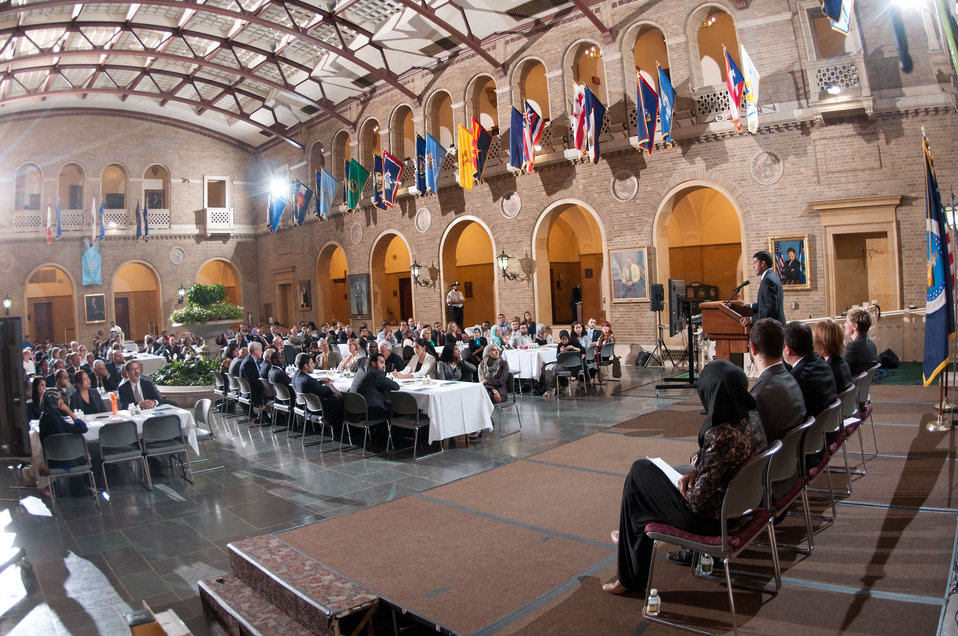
U.S. Agency for International Development (USAID) Administrator Dr. Rajiv Shah spoke at theIftar event, co-sponsored by the Iftar celebration, co-sponsored by the U.S. Department of Agriculture, U.S. Agency for International Development (USAID) and Islamic Relief USA, on Tuesday, August 7, 2012, in the USDA Whitten Building, in Washington, D.C. Ramadan is the month of fasting, intensive prayer, sacrifice and worship for Muslims around the world. Throughout this month, Muslims fast during the day, abstaining from consuming food from dawn to dusk and using this time to purify spiritually. Fasting reminds Muslims of the poverty and hunger suffered by many in the United States and worldwide. It is a connection with those who are hungry not through devotion, but through the many global factors that lead to hunger and famine. Iftar is the meal at which Muslims break their fast at sunset, usually by eating dates, according to the Prophetic tradition.